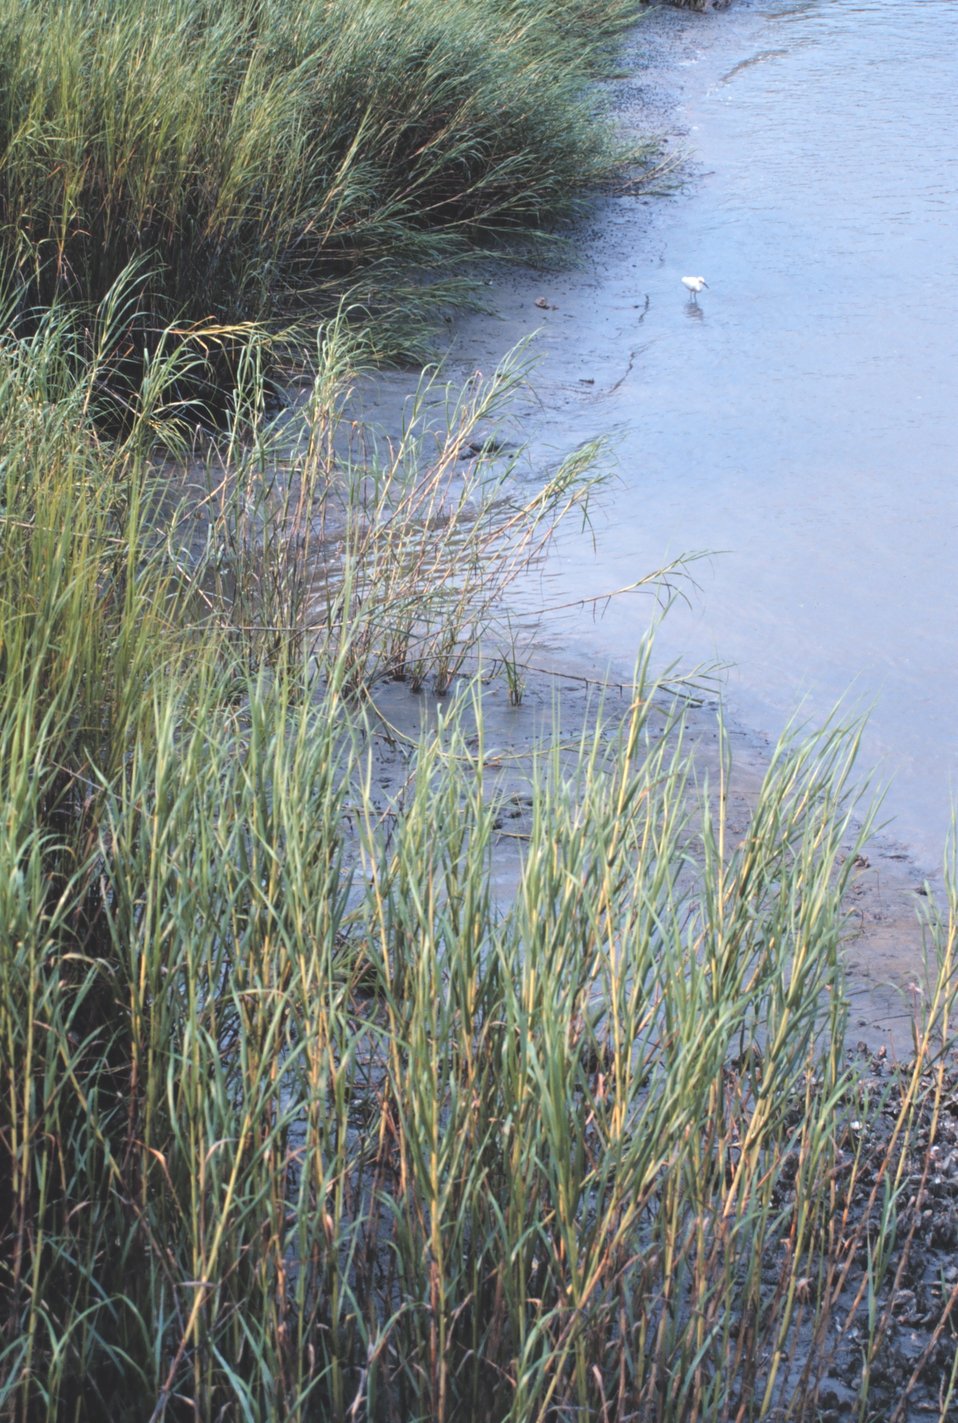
Tidal mudflats